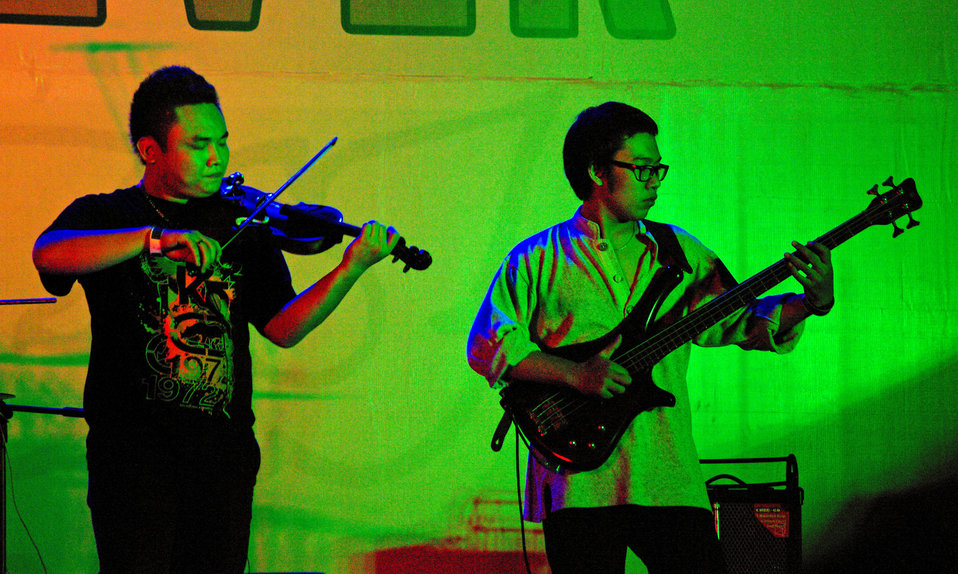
PEPFAR, U.S. Embassy Host Dengue Fever Concert in Hanoi